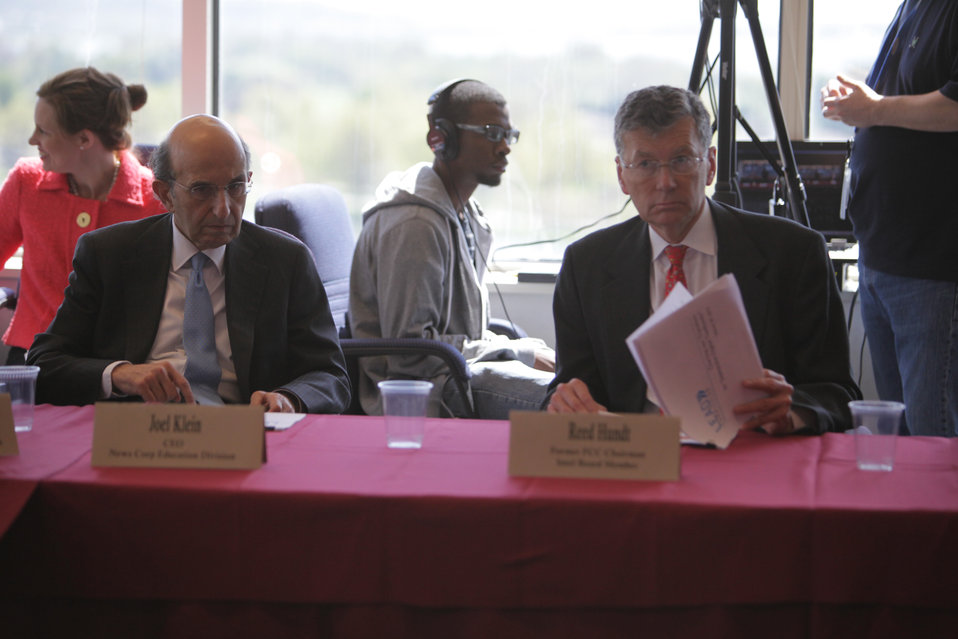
FCC Chairman Host Leaders From the Digital Education Ecosystem

CEO of News Corps Education Division, Joel Klein and Former FCC Chairman and Intel Board Member, Reed Hundt attends FCC Chairman's event at FCC's HQ in Washington, DC on March 29, 2012.